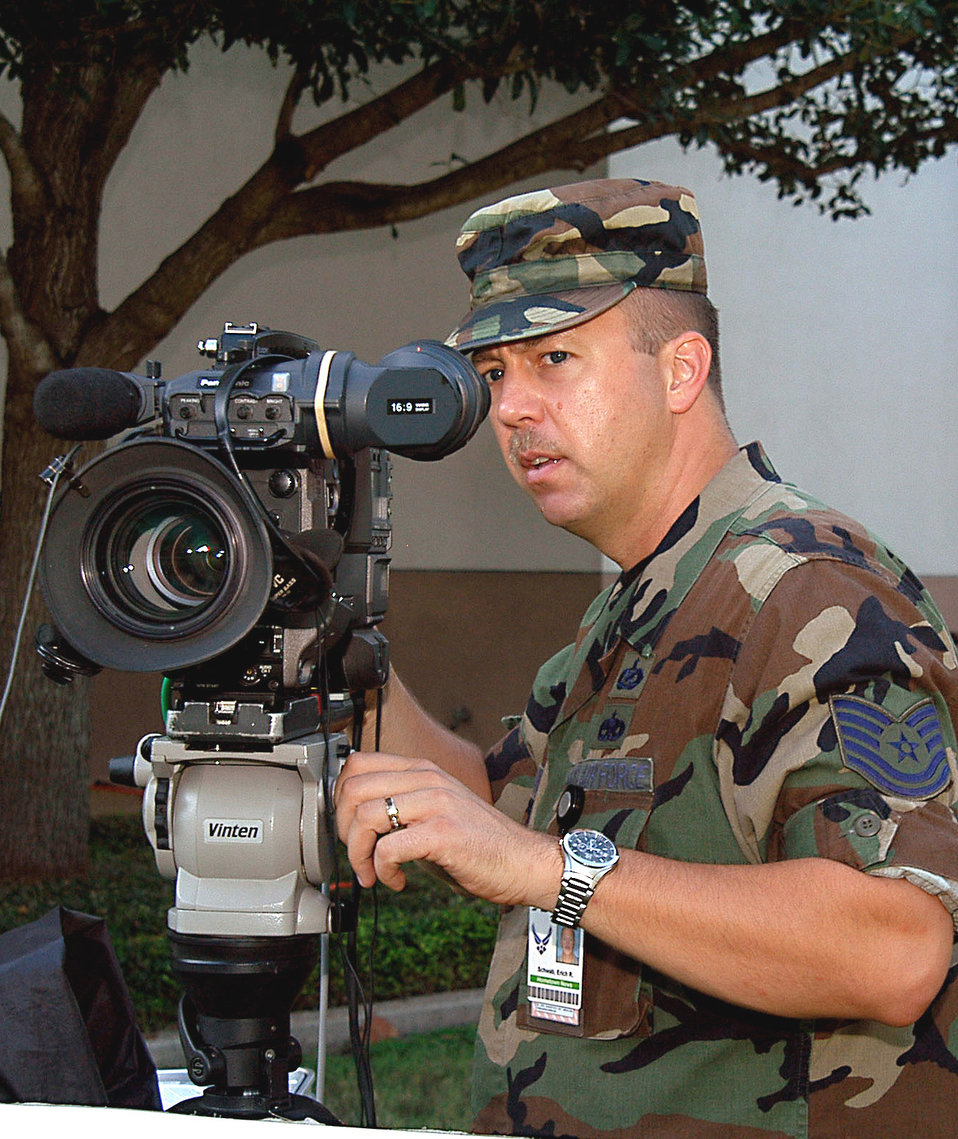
Schwab

SAN ANTONIO -- Tech. Sgt. Erich Schwab tapes a mock holiday greeting during training here Aug. 27. Three teams of broadcasters from the Army and Air Force Hometown News Service will travel the globe to tape airmen, soldiers, sailors and Marines who want to send a video message home for the holidays. The teams will visit more than 75 bases in less than six weeks.